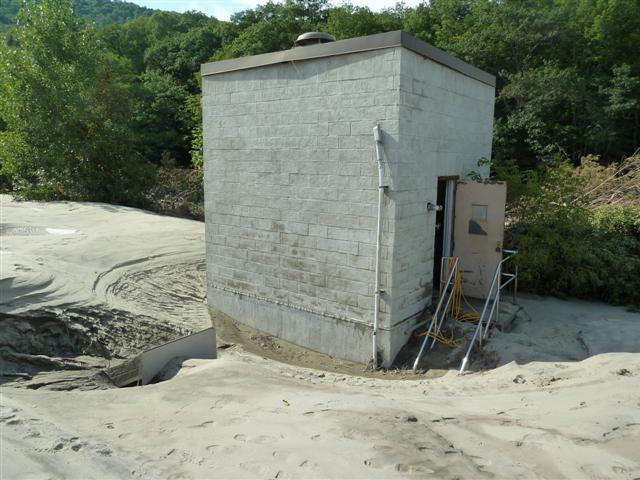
Damage at White River NFH - Bethel, VT

Damage at the river intake pump station.